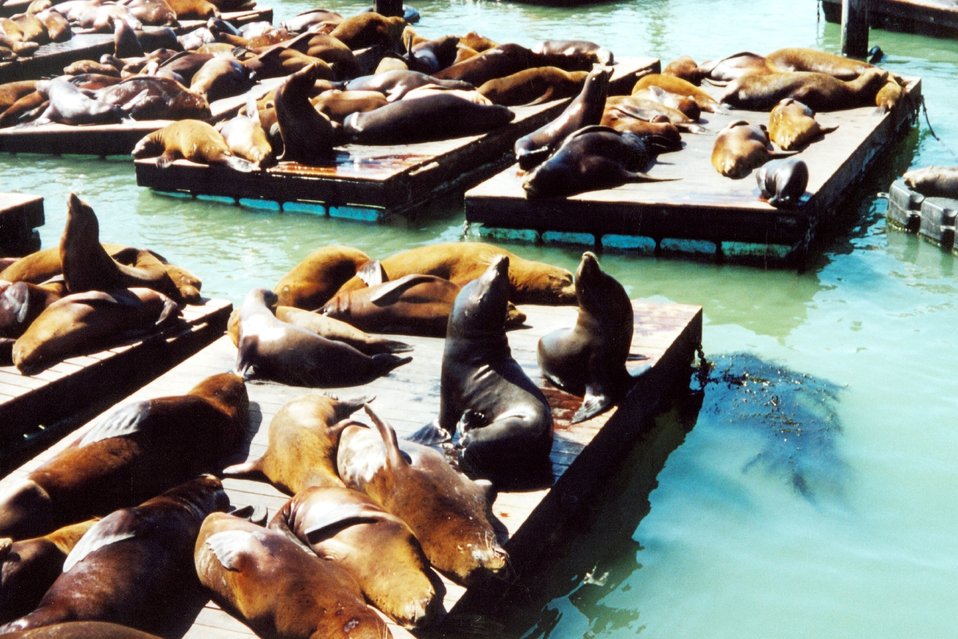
Sea lions lollygagging in the sun near Fisherman's Wharf.